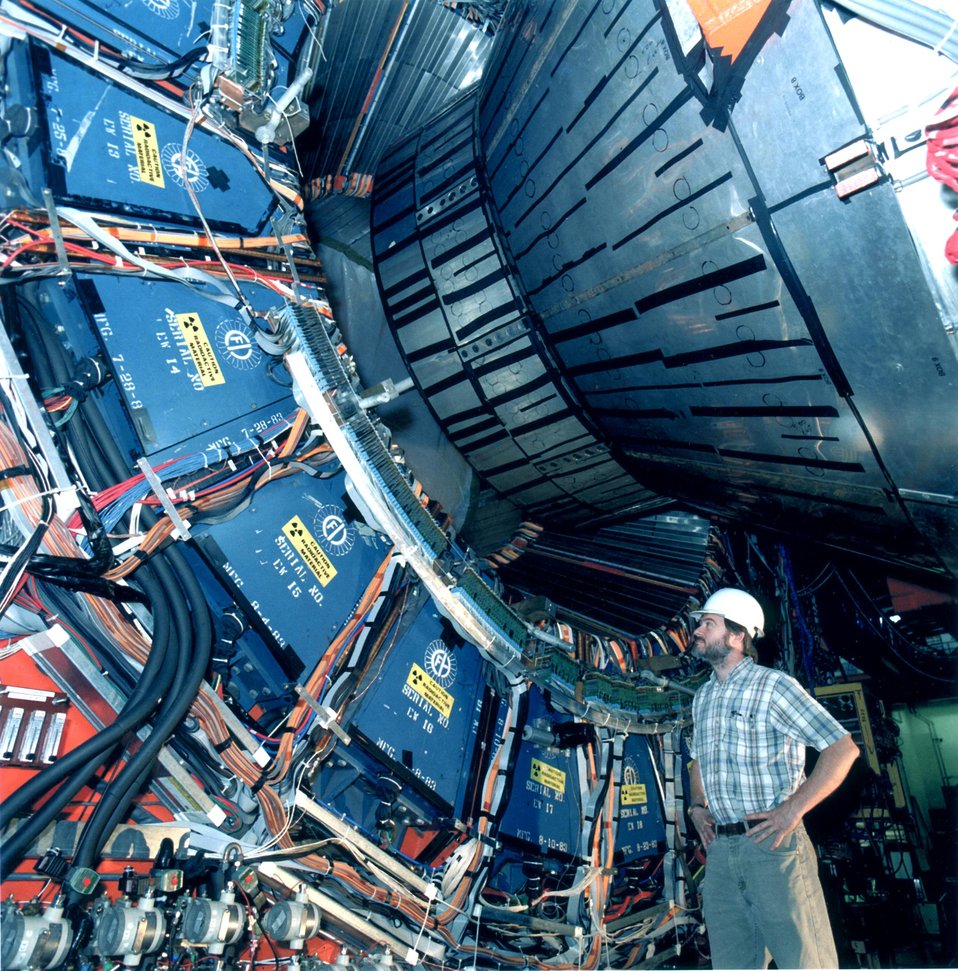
FERMILAB PHYSICIST INSPECTS THE PROPER POSITIONING OF ONE OF CDF'S TWO END CAPS INSIDE THE DETECTOR.

FERMI'S TWO DETECTORS, THE COLLIDER DETECTOR FACILITY (CDF) AND D-ZERO ARE ABOUT FOUR STORIES HIGH, WEIGHING ABOUT 5000 TONS EACH. THE PARTICLE COLLISIONS OCCUR RIGHT IN THE MIDDLE OF THE DETECTORS, WHICH ARE CRAMMED WITH ELECTRONIC INSTRUMENTATION.